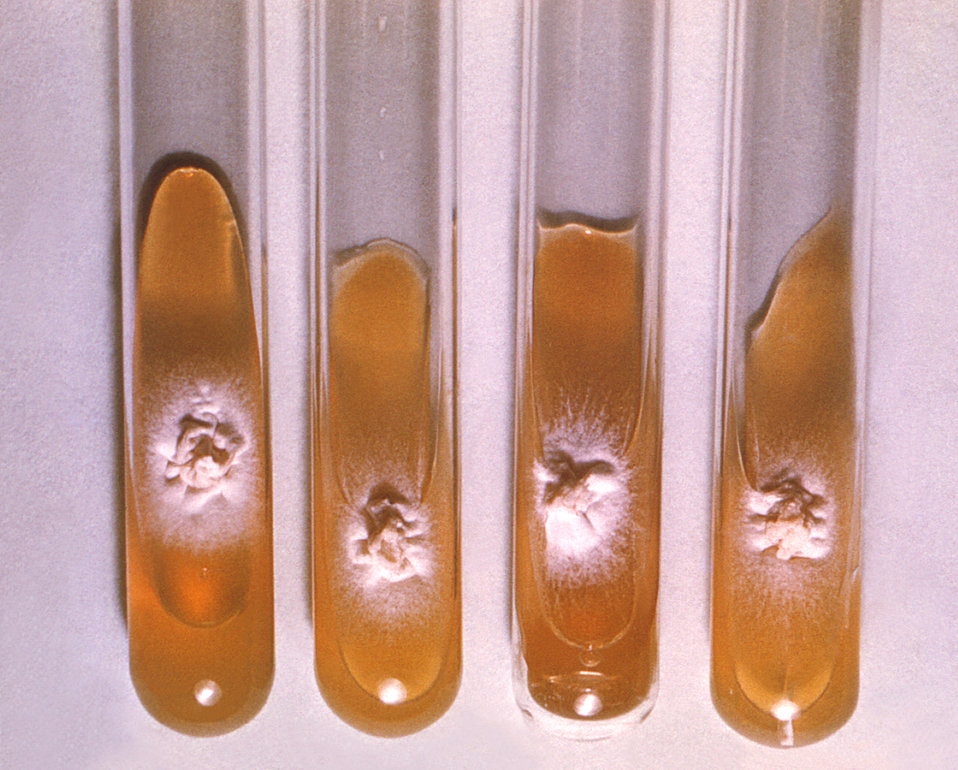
This photograph depicts three nutrition test tube slant cultures, which had been inoculated with Trichophyton schoenleinii fungal organisms in order to see if the addition of thiamine (vitamin B1), had any impact upon the growth-rate of these colonies. In this case, thiamine had no impact upon the colonial growth pattern of this dermatophyte.